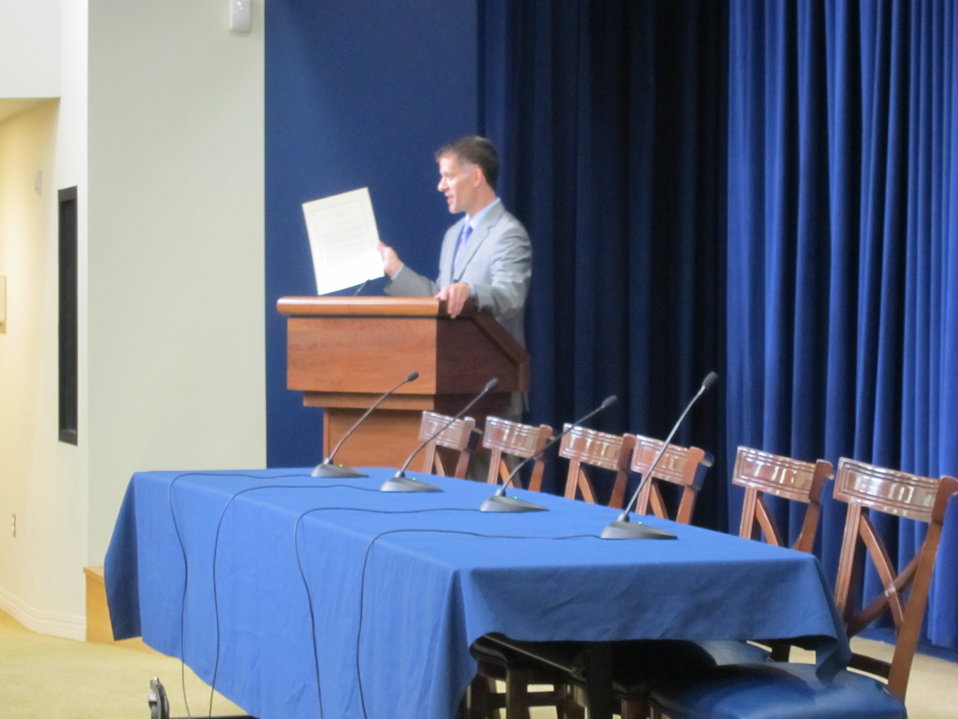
WH 2012 World Hepatitis Day Event